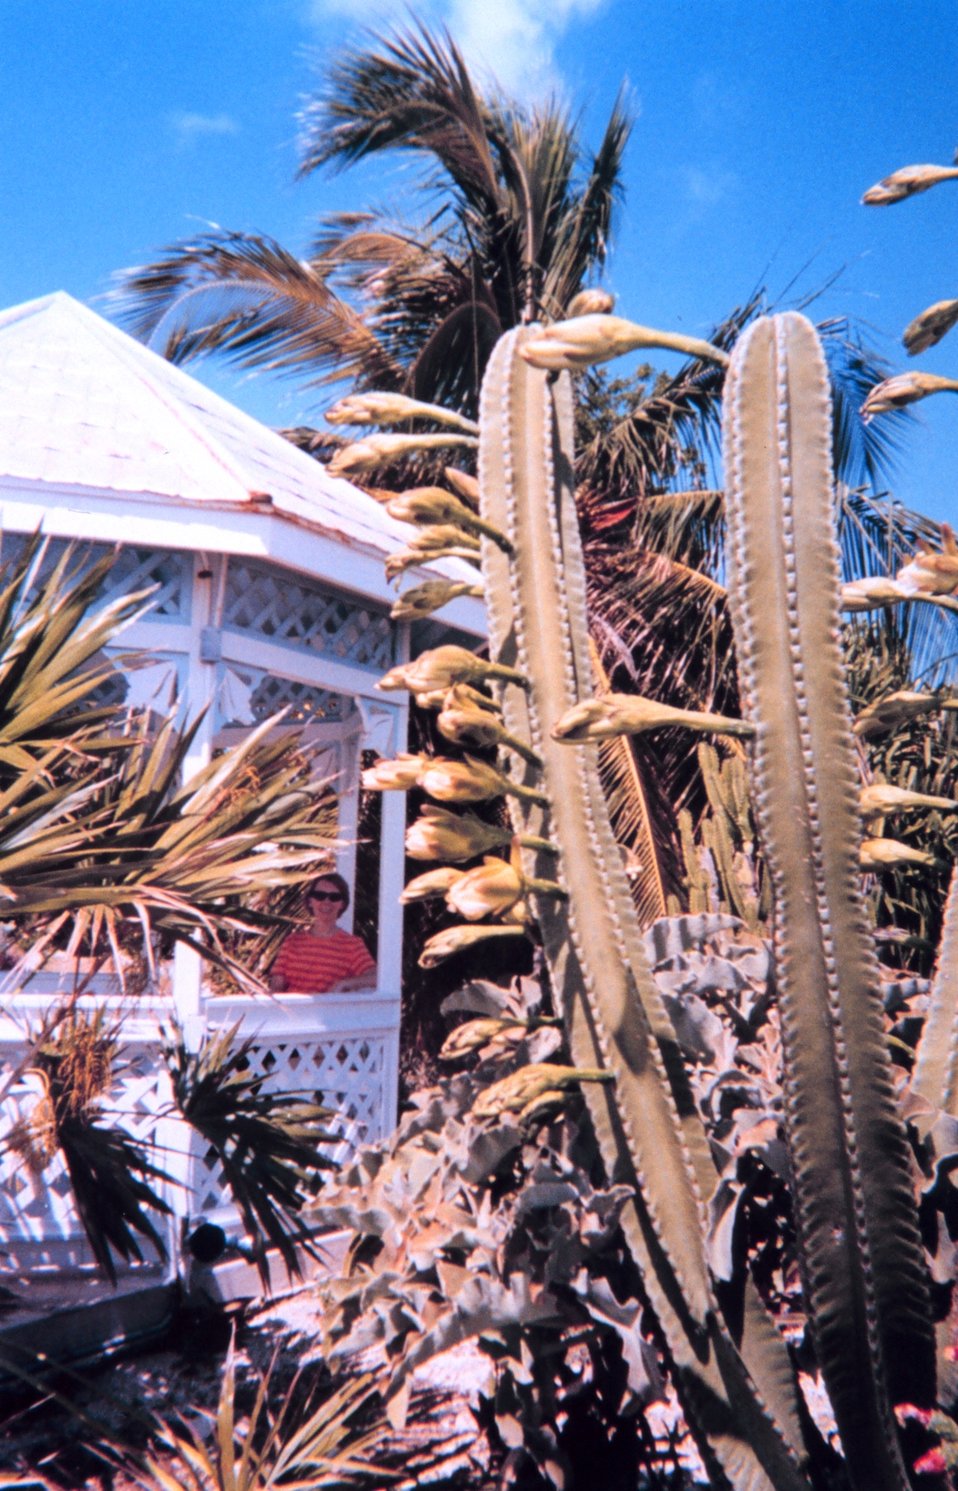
Enjoying the gazebo at the Key West Garden Club gardens at the West Martello, a part of the Civil War era defenses of Key West on the south side of the island.